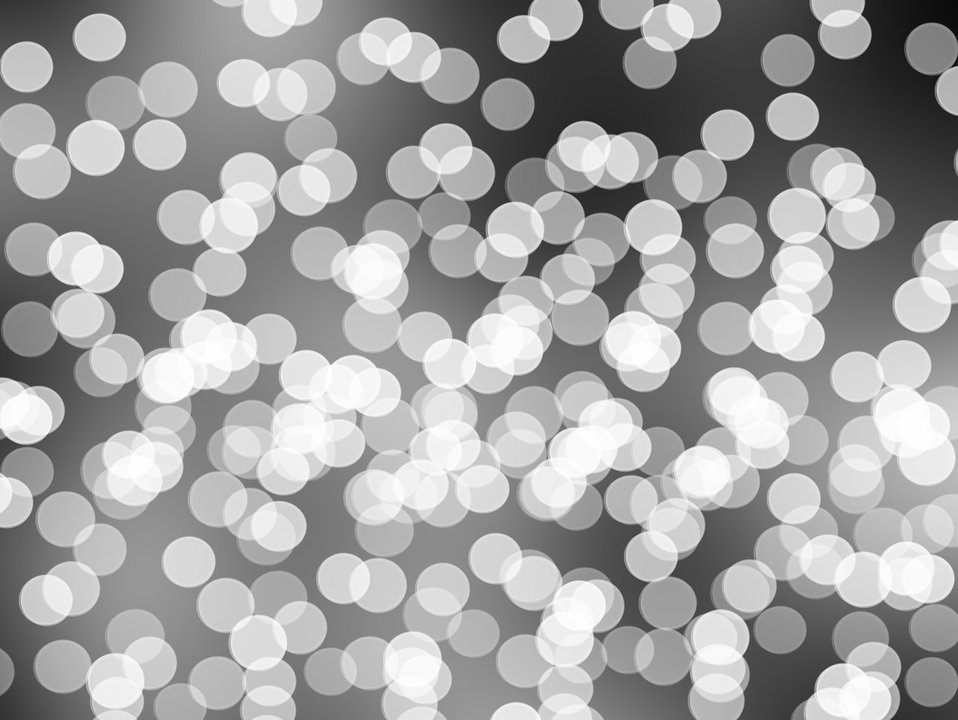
Out-of-focus christmas lights

Christmas lights that are out of focus.